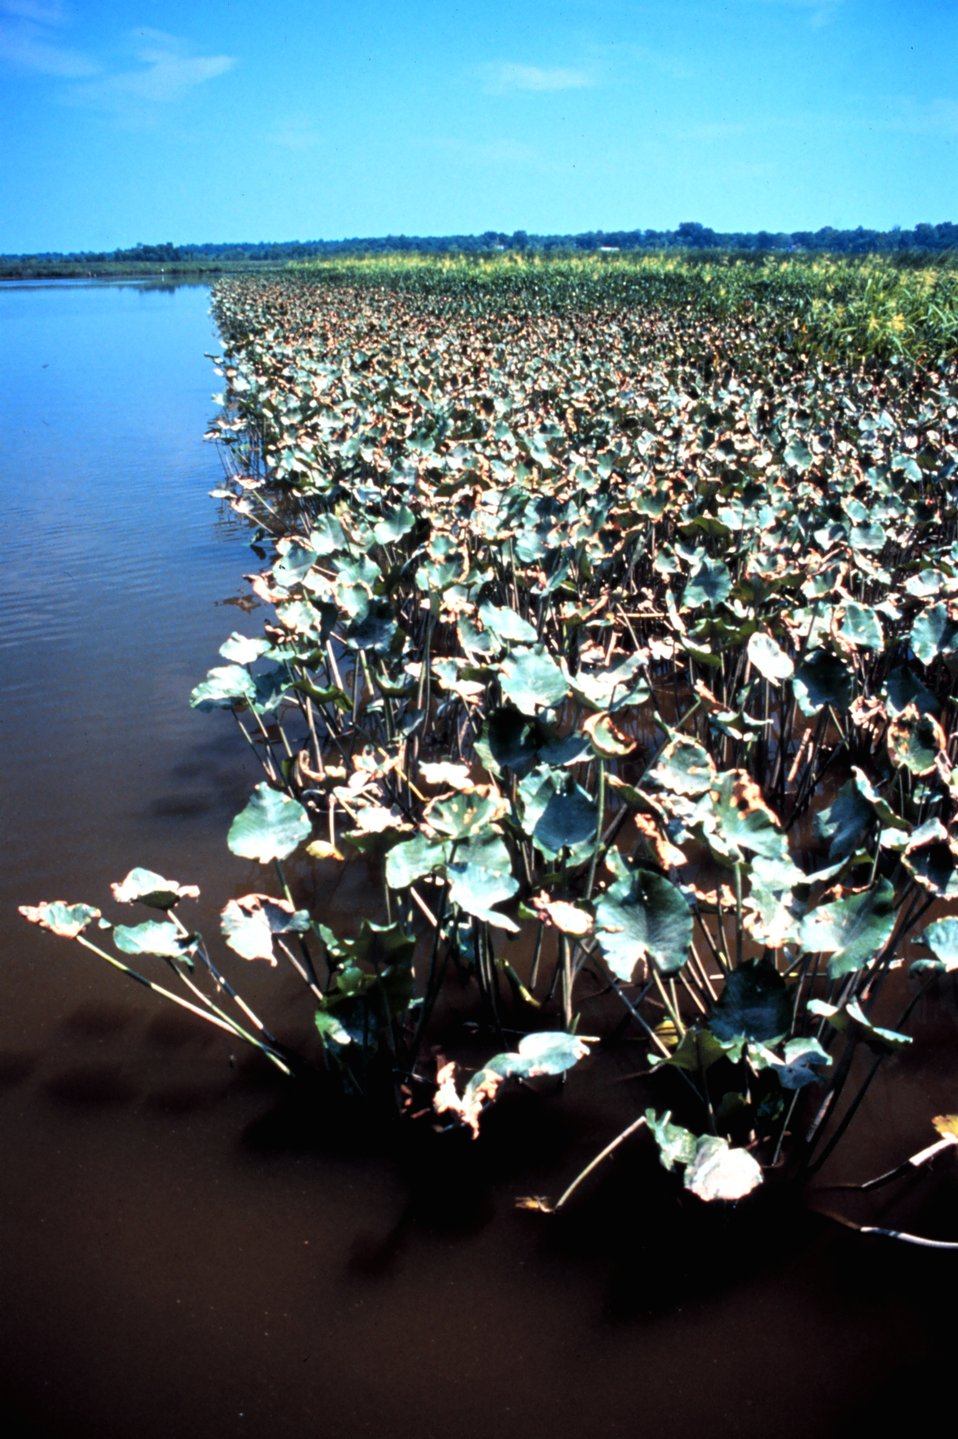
Chesapeake Bay - Maryland National Estuarine Research Reserve.